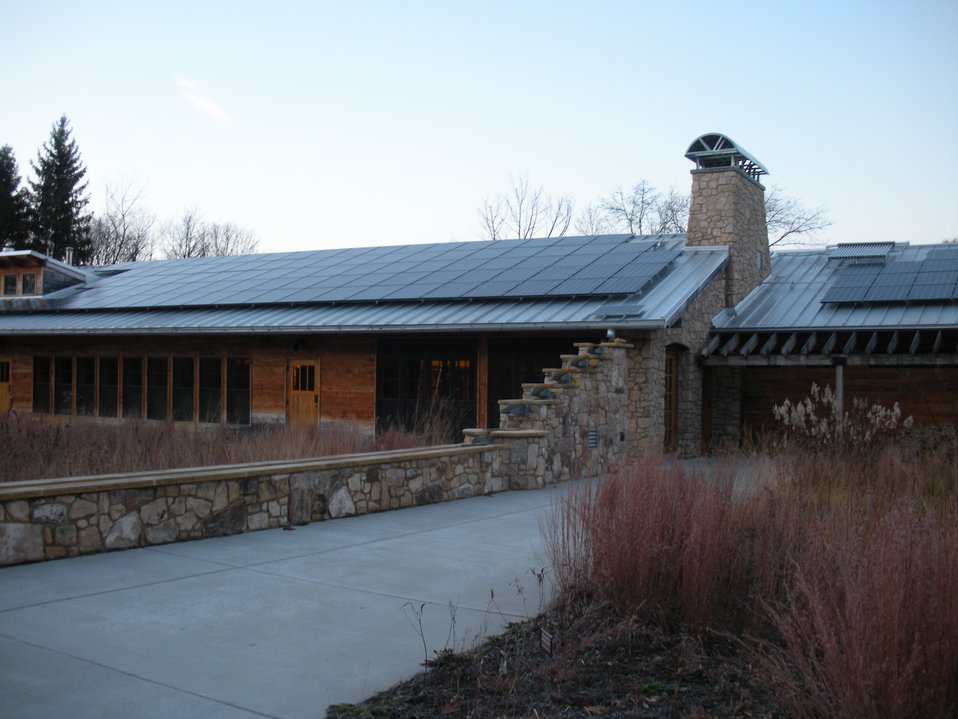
The Leopold Center

Get more info on the building at www.aldoleopold.org/legacycenter/index.html